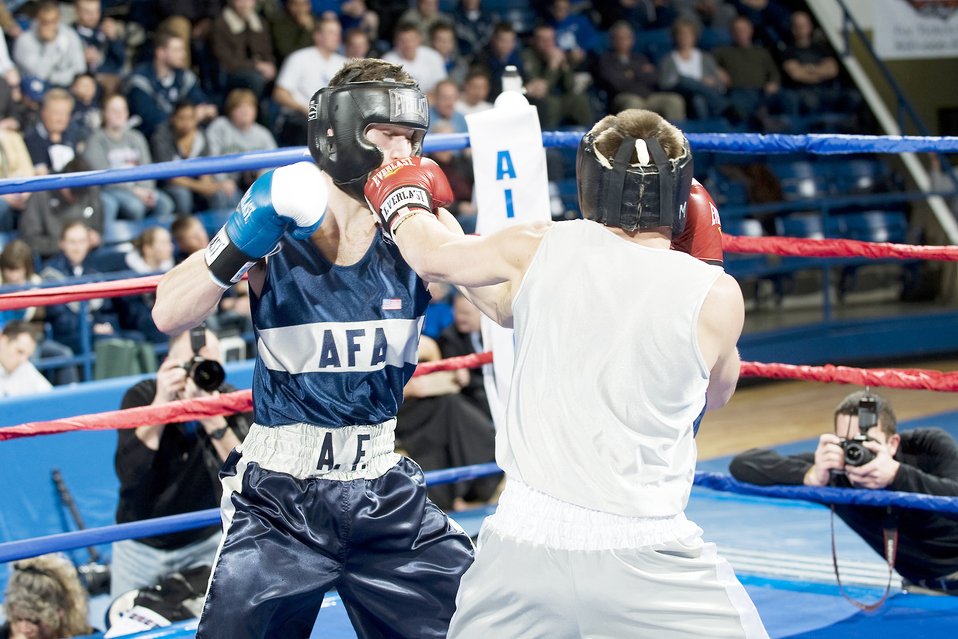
Academy Open Boxing Championship

Air Force senior Bailey Ball lands a straight left hand to the face of fellow pugilist freshman Daniel Starr during the Air Force Academy's Wing Open championships held March 5, 2010, at the Academy's Clune Arena in Colorado. Ball went on to win the bout by decision.